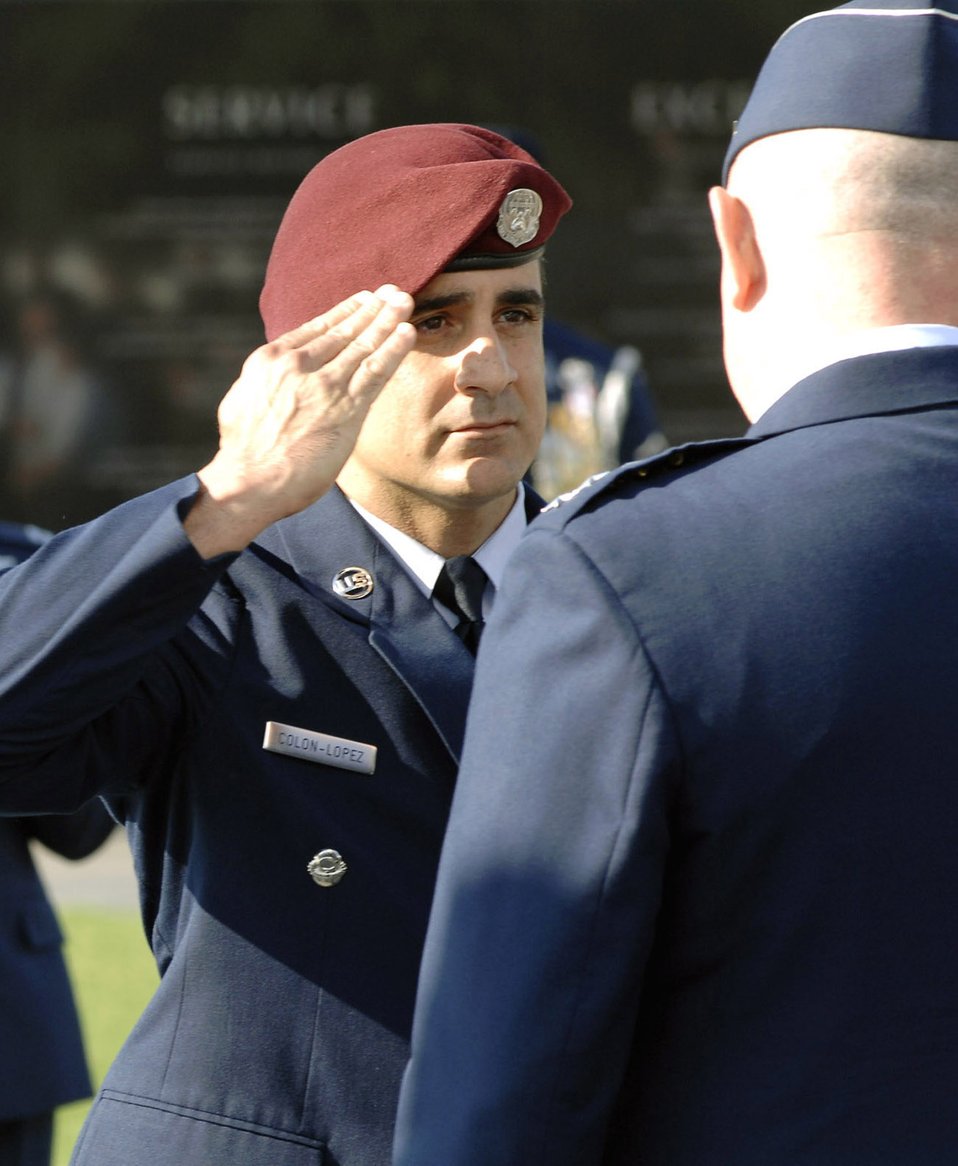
Air Force Combat Action Medal

Senior Master Sgt. Ramon Colon-Lopez salutes Air Force Chief of Staff Gen. T. Michael Moseley after being presented the Air Force Combat Action Medal. The medal was presented to six Airmen in a ceremony held at the Air Force Memorial June 12 in Arlington, Va.